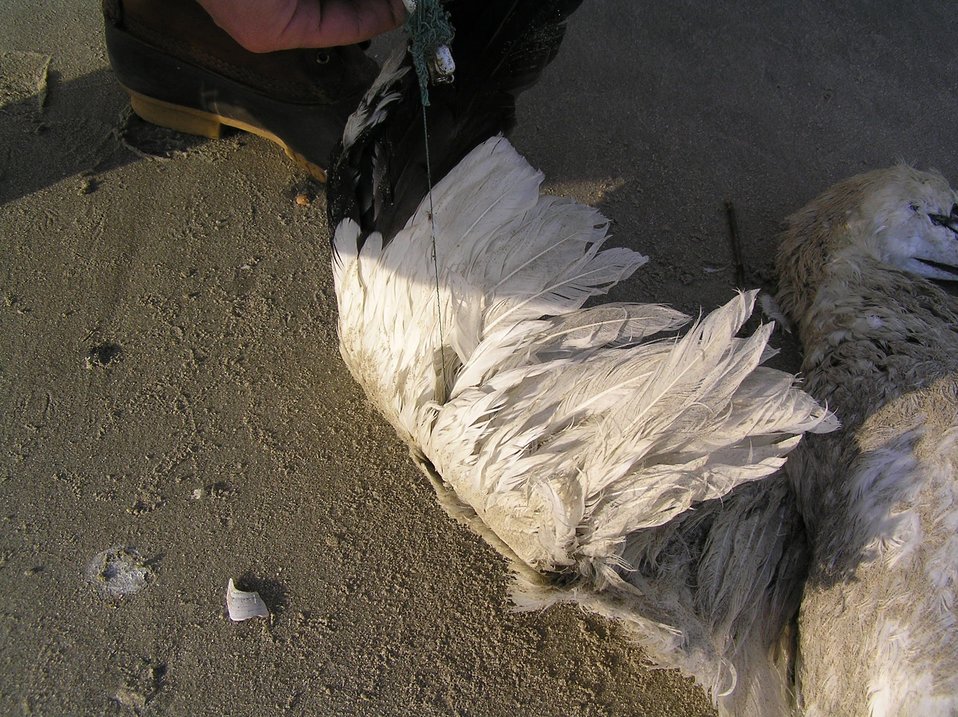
Gannet wing

Eastern Shore of Virginia Refuge.